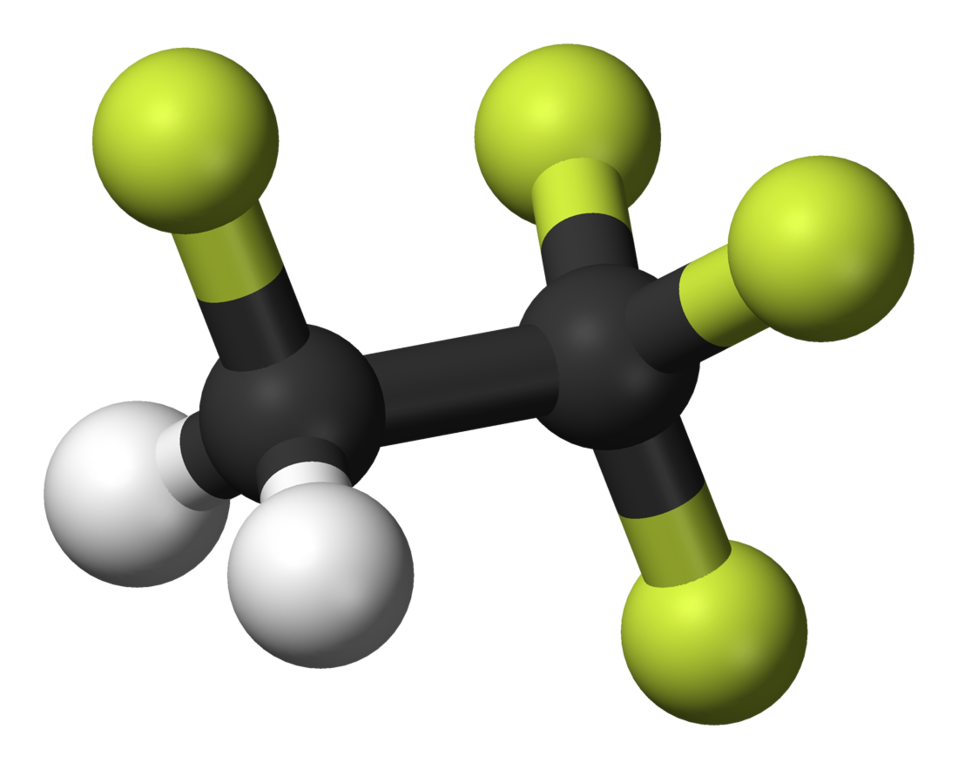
1,1,1,2-tetrafluoroethane-3D-balls